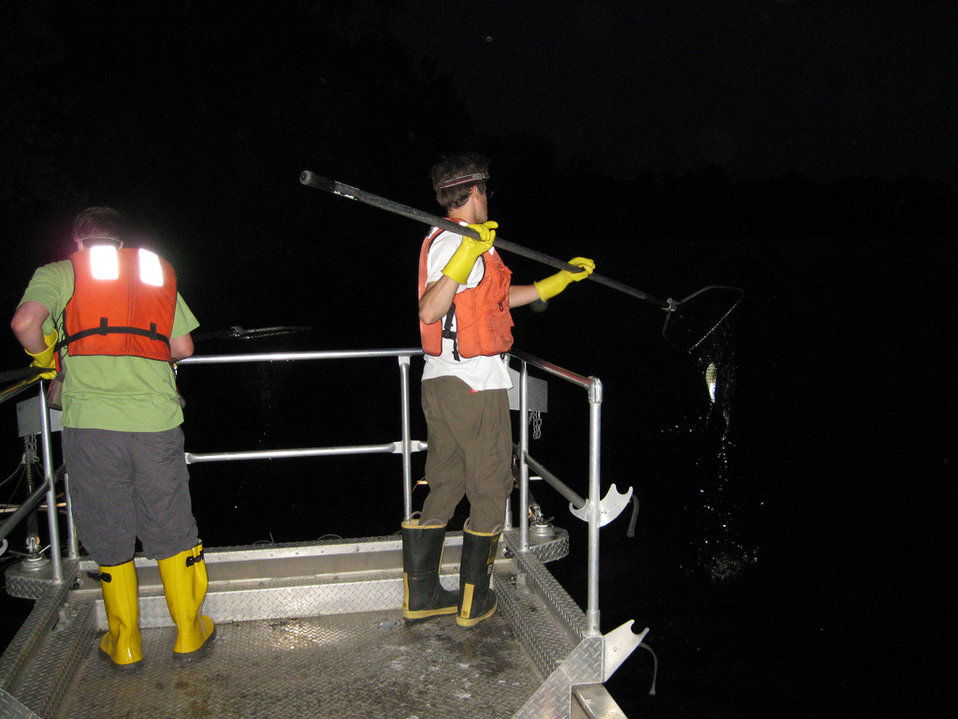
Electrofishing

U.S. Fish and Wildlife Service